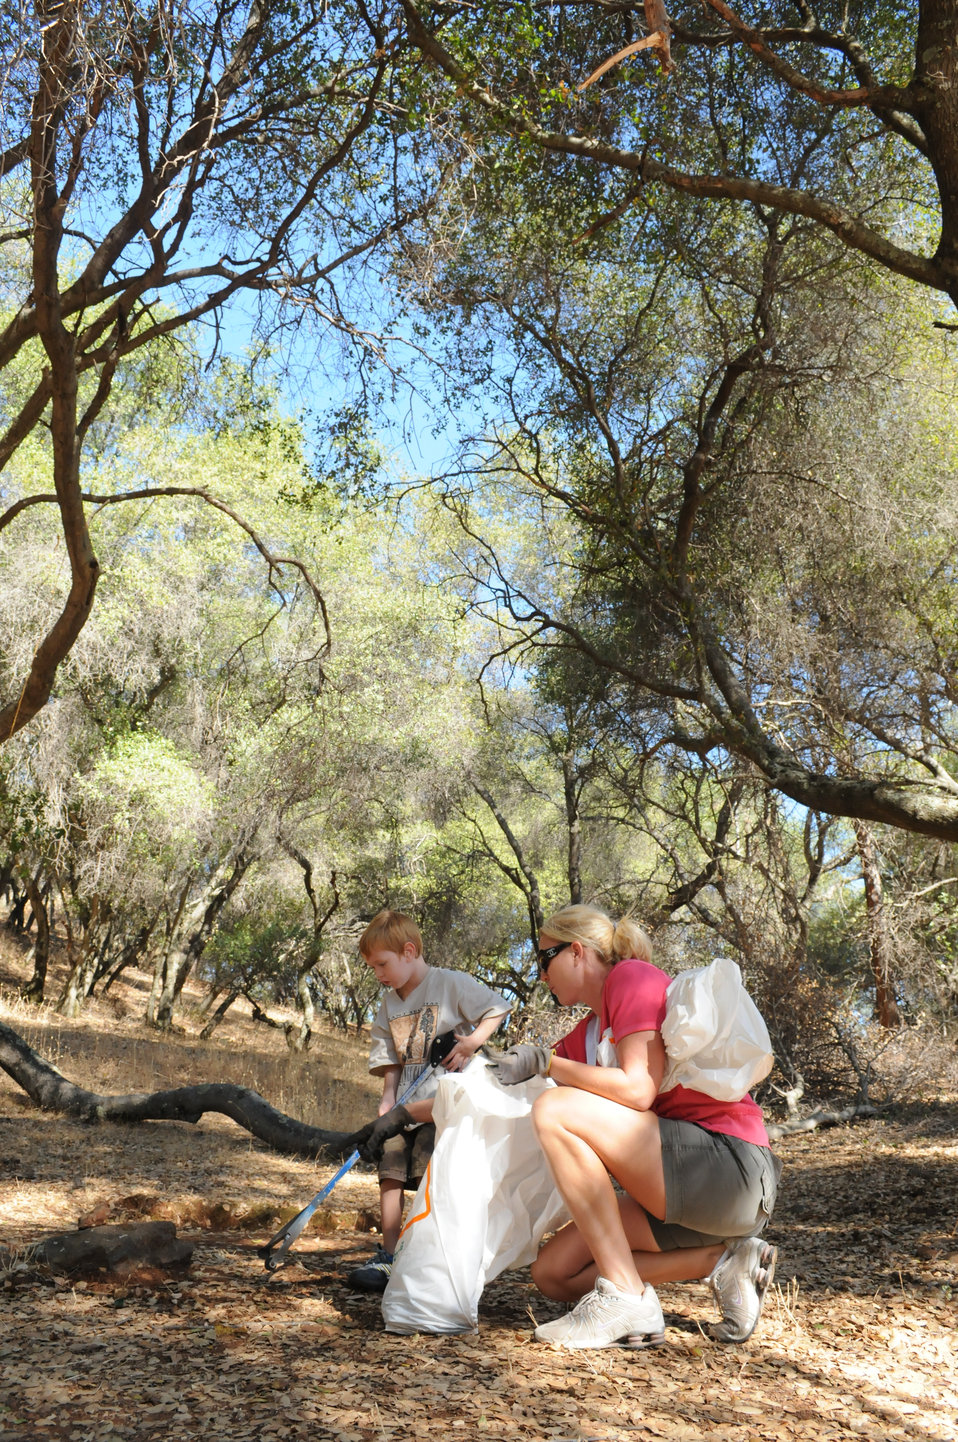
ENGLEBRIGHT LAKE, Calif. (Sept. 25, 2010) -- Volunteers help clean a campground during the 17th annual National Public Lands Day here Sept. 25. Park rangers from the U.S. Army Corps of Engineers Sacramento District and more than 55 volunteers celebrated the day with cleanup efforts, which yielded more than 300 pounds of trash. The Corps has been involved with National Public Lands Day since its inception in 1994 and has consistently been one of the largest providers of sites and volunteers participating in the event. This year, the celebration coincides with California Coastal Cleanup Day and President Barack Obama’s America’s Great Outdoors Initiative, an effort to promote the conservation of outdoor spaces and reconnect Americans to the outdoors.